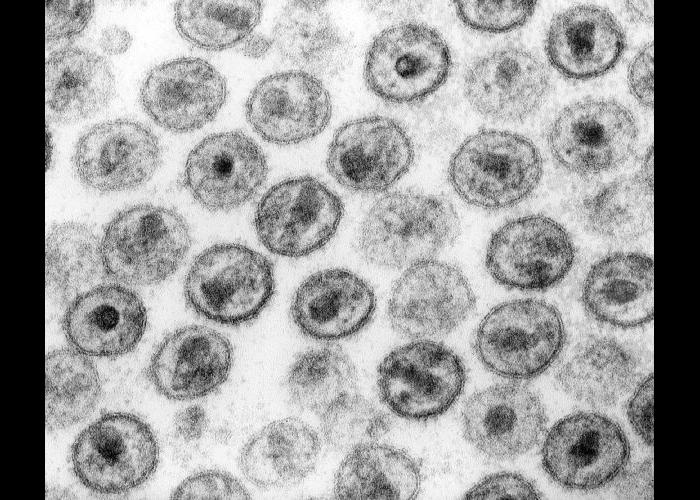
HIV-1. Transmission electron micrograph.